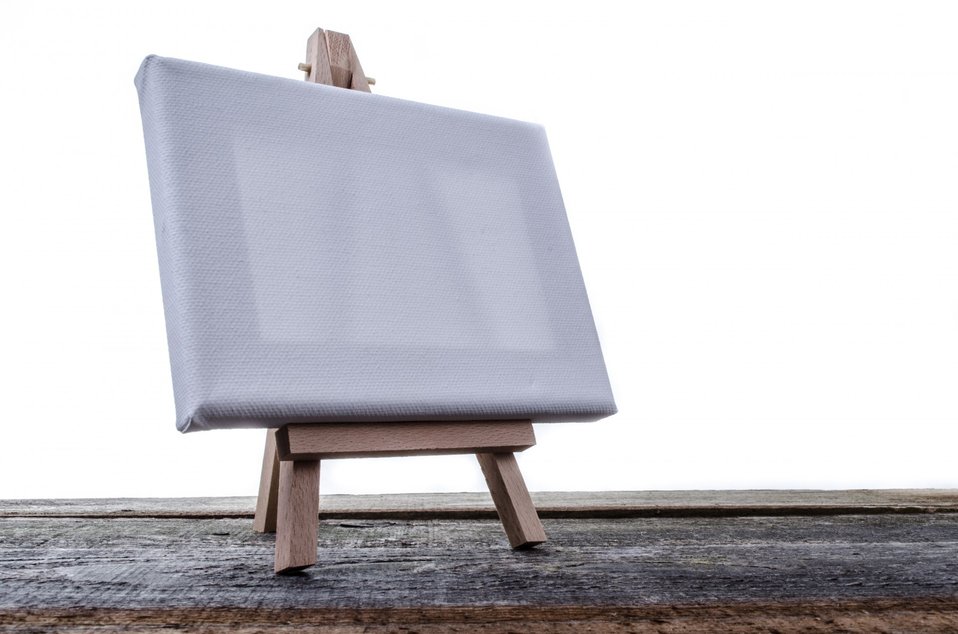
Small easel with a blank canvas.